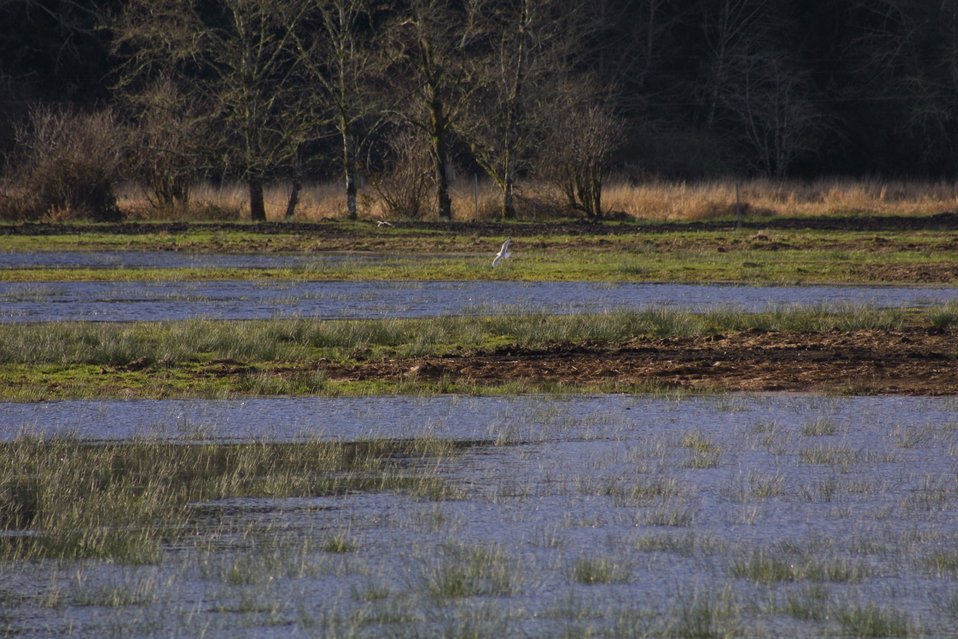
Wetlands at the Dean Creek Watchalbe Wildlife site near Reedsport, Oregon.